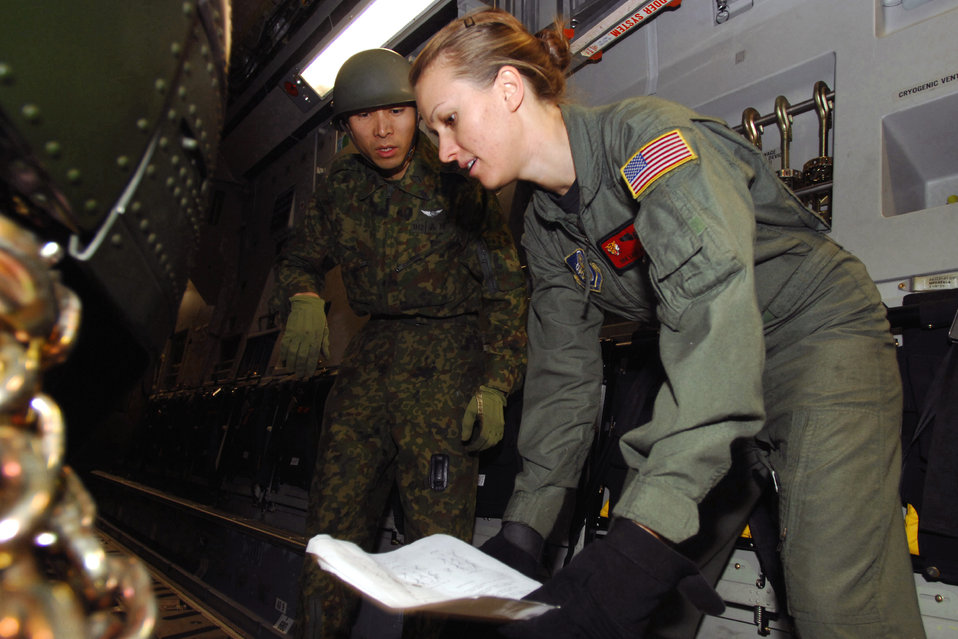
Airmen load Japanese helicopter into U.S. plane

Senior Airman Lisa Long (right) and a Japan Ground Self Defense Force member load a JGSDF CH-47J Chinook onto a C-17 Globemaster III Feb. 23 at Yokota Air Base, Japan. The demonstration was conducted during the Pacific Global Air Mobility Seminar held Feb. 22 and 23. Sergeant Boehm is a loadmaster assigned to the 535th Airlift Squadron at Hickam Air Force Base, Hawaii. The C-17 is also assigned to the 535th Airlift Squadron. The CH-47J is assigned to the 1st Helicopter Brigade at JGSDF Camp Kisarazu in Kisarazu City, Chiba Prefecture.